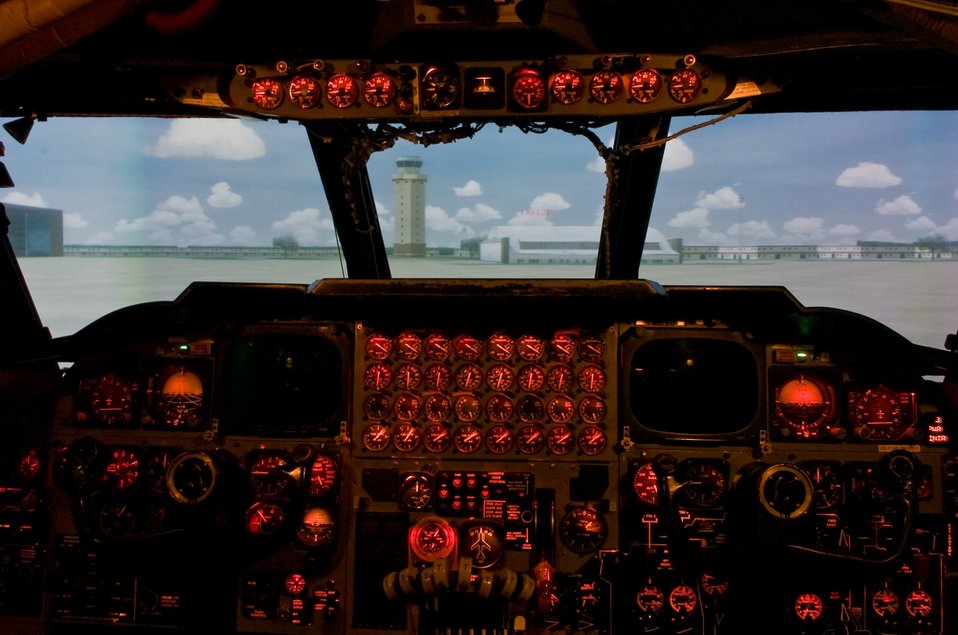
B-52 simulators receive overhaul

A virtual Barksdale Air Force Base, La., flightline can be seen through the windshield of a B-52 Stratofortress simulator April 28 at Barksdale AFB. A new dome projection surface provides a more realistic view for pilots training on the simulator.